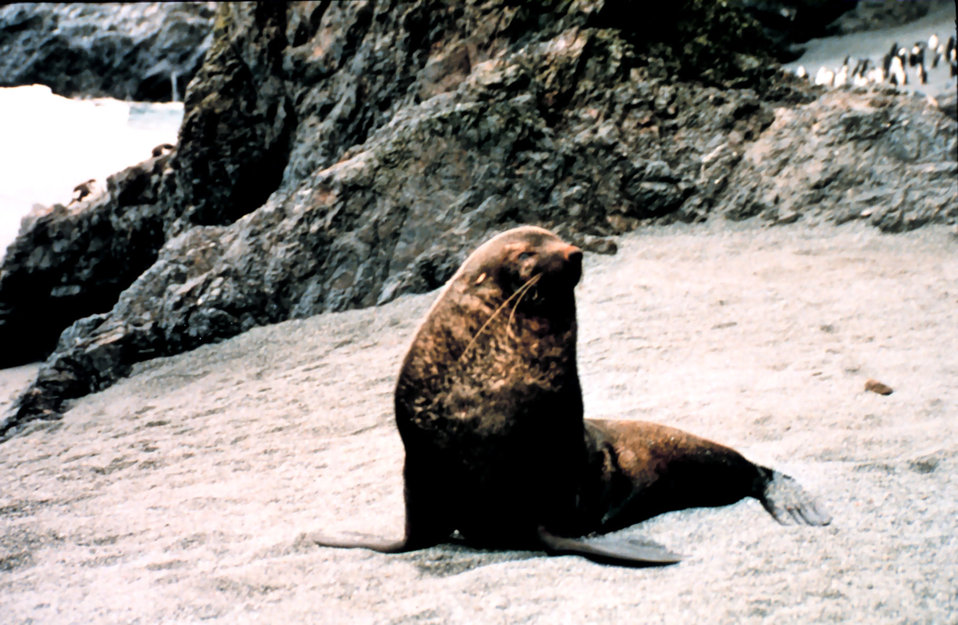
Southern fur seal with penguins in the background.